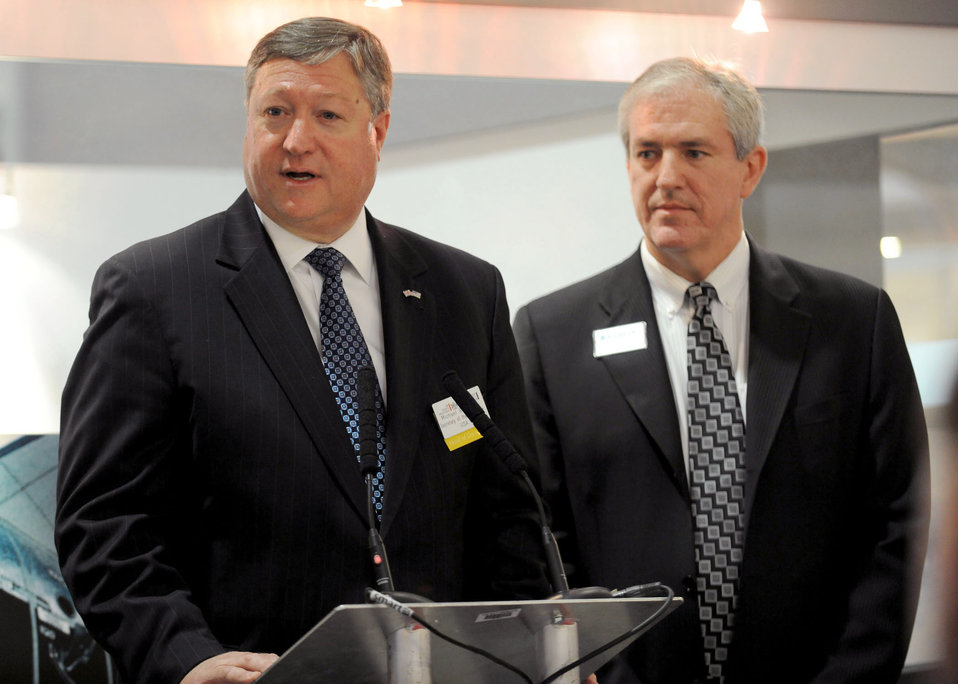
Farnborough International Air Show highlights servicemembers, aircraft

Secretary of the Air Force Michael B. Donley provides remarks July 19, 2010, at the official ribbon cutting ceremony at the Farnborough International Air Show in Farnborough, England. Approximately 70 aircrew and support members from bases in Europe and the U.S. participated in the air show. The event allows exhibitors to showcase the newest aerospace equipment and technology.